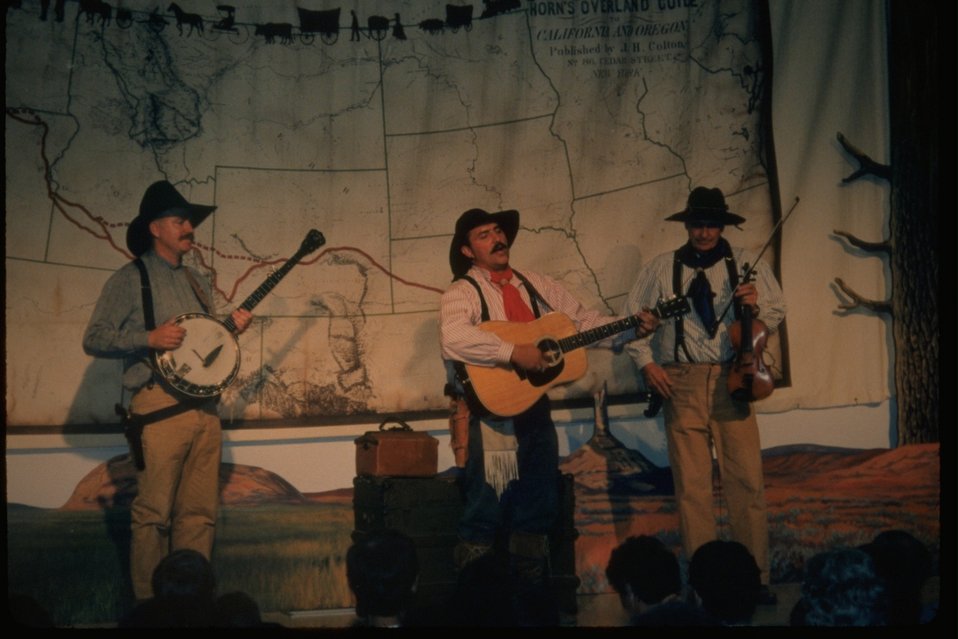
Theater Performance --Prairie Dog Music Co.-- at the NHOTIC.